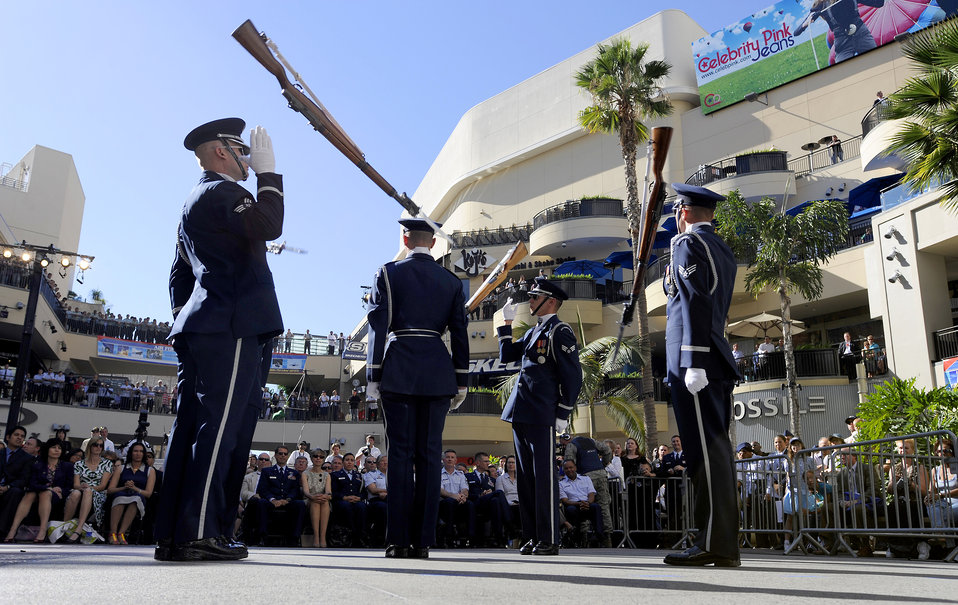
Air Force Week kicks off in Los Angeles

The Air Force Honor Guard Drill Team performs Nov. 14 at Hollywood and Highland Plaza in Los Angeles during the opening ceremonies for Air Force Week-Los Angeles. The drill team performance was one of many attractions at the event. Others included flyovers by several different Air Force aircraft, interactive expos and performances by the Air Force band. Air Force Week-Los Angeles is Nov. 14 to 21 and has events throughout the area.